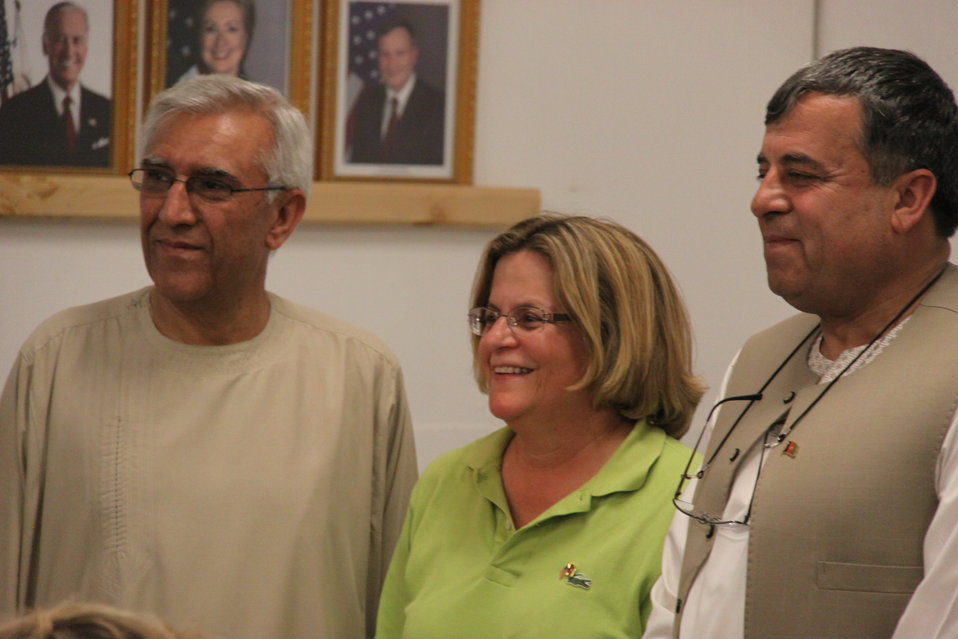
Meeting with Local Leaders in Kandahar